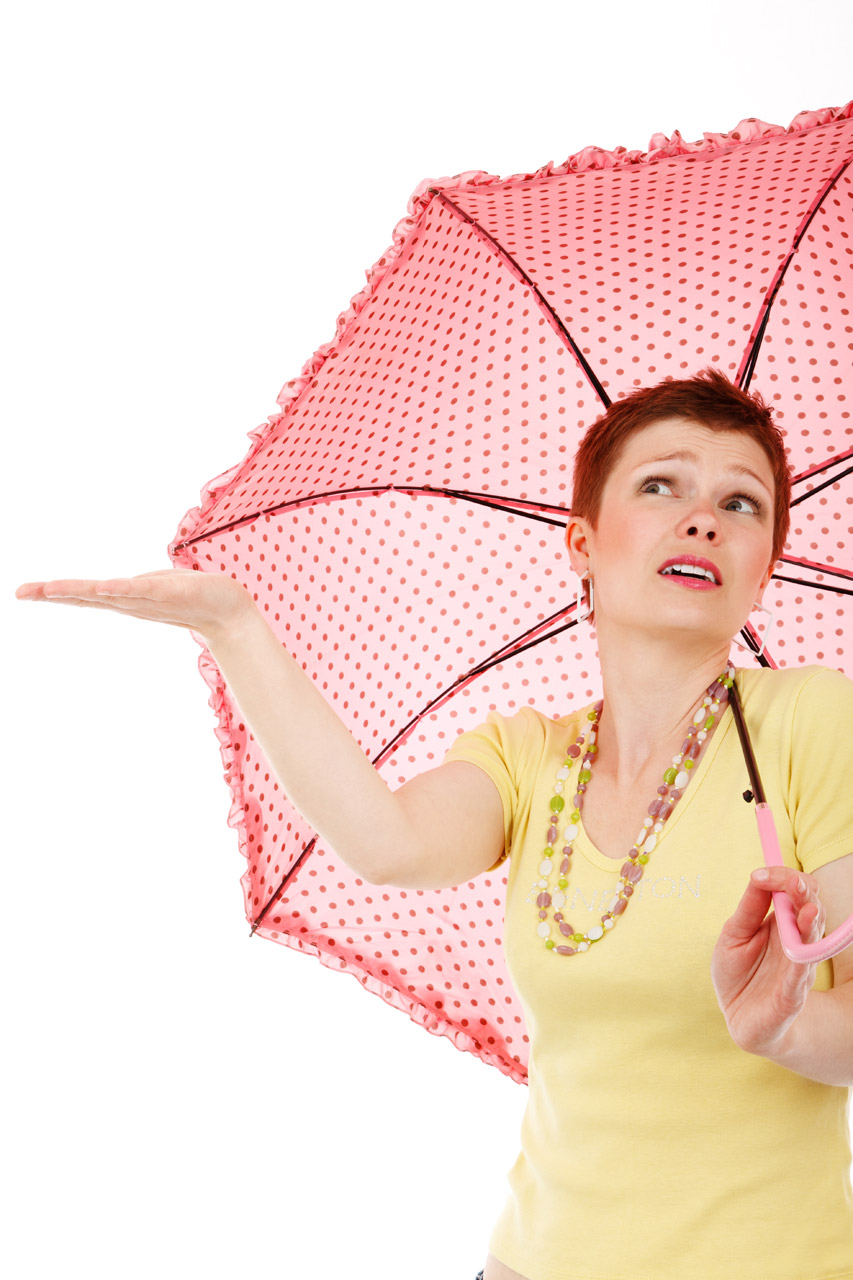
Checking the rain

Young woman is checking if it is still raining.